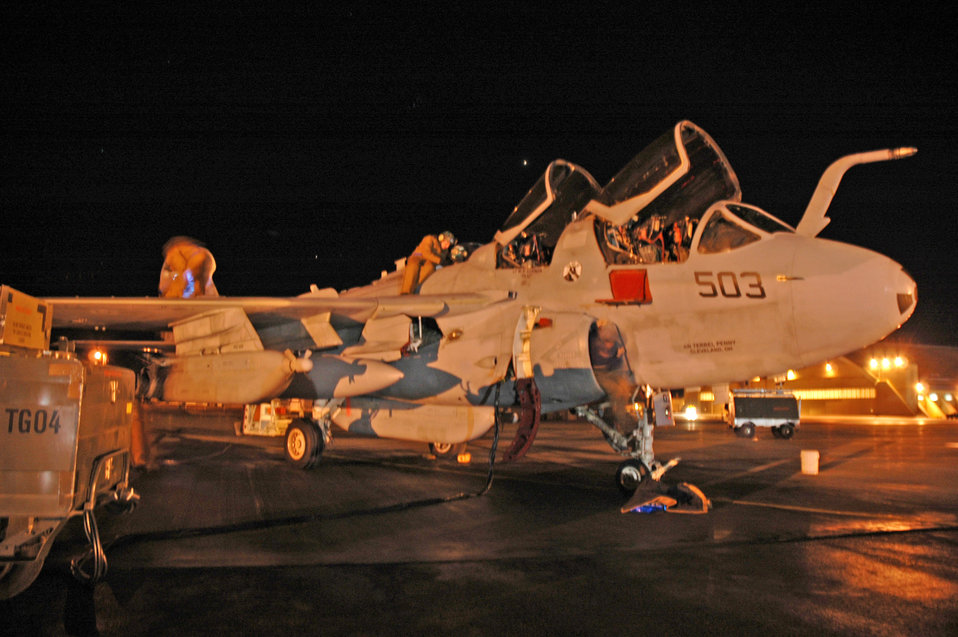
Maintainers keep Cope Thunder going

EIELSON AIR FORCE BASE, Alaska -- Sailors from Naval Station Whidbey Island, Wash., do a post flight maintenance inspection on an A-6 Intruder aircraft of Electronic Attack Squadron 133. Sailors are taking part -- along with 1,000 active duty and Air National Guard Airmen and 87 aircraft -- part in exercise Cope Thunder 06-1, which ends Oct. 21. Pacific Air Forces hosts the two-week air combat training exercise.